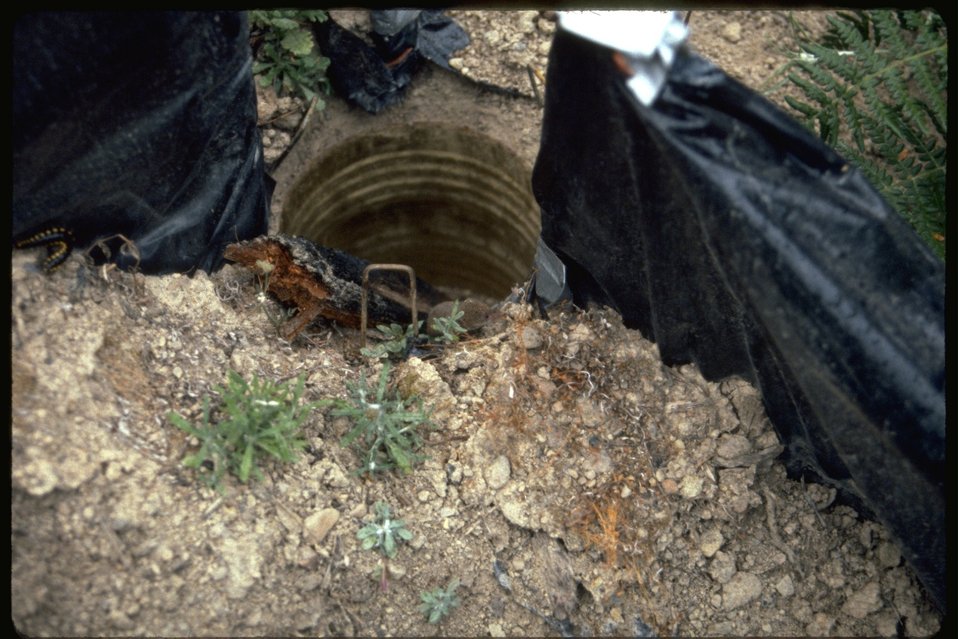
A shrew in an amphibian trap.